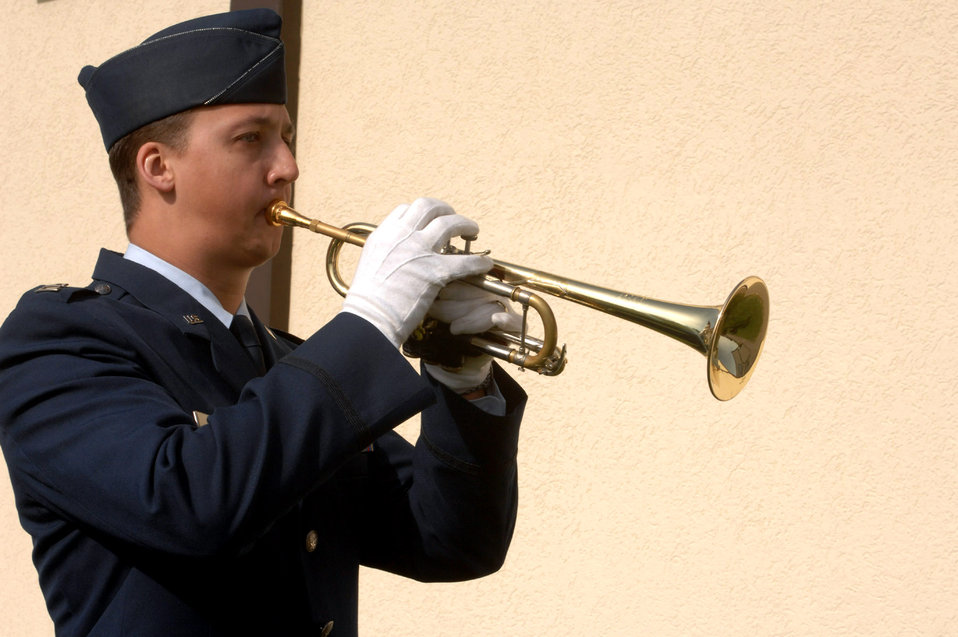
School honors fallen Airman, former student

Capt. Mike McCarthy plays